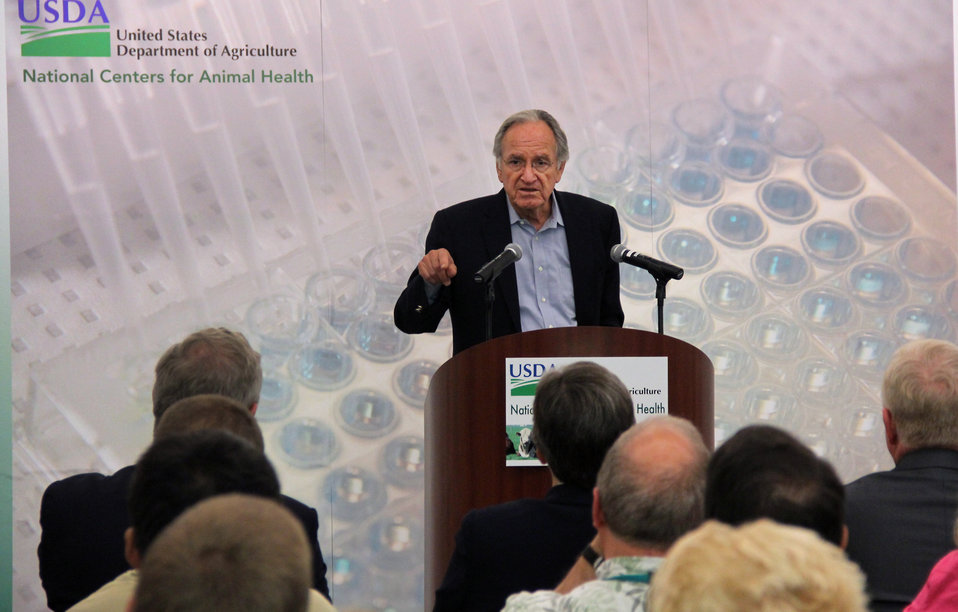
Senator Tom Harkin (IA) speaks on his years of service in the U.S. Senate and how he was able to bring the U.S. Department of Agriculture's (USDA) National Center for Animal Health to Ames, IA during his visit to the facility on Friday, Jun. 6, 2014.